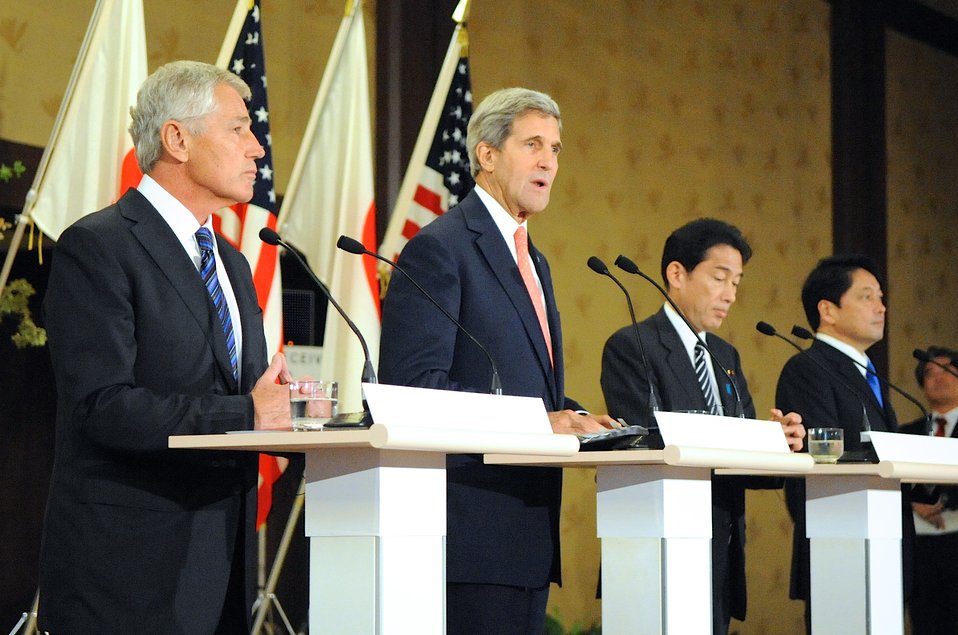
Secretary Kerry Address Reporters

U.S. Secretary of State John Kerry, U.S. Defense Secretary Chuck Hagel, and their Japanese counterparts, Fumio Kishida and Itsunori Onodera, speak to reporters after a joint meeting in Tokyo, Japan, on October 3, 2013.